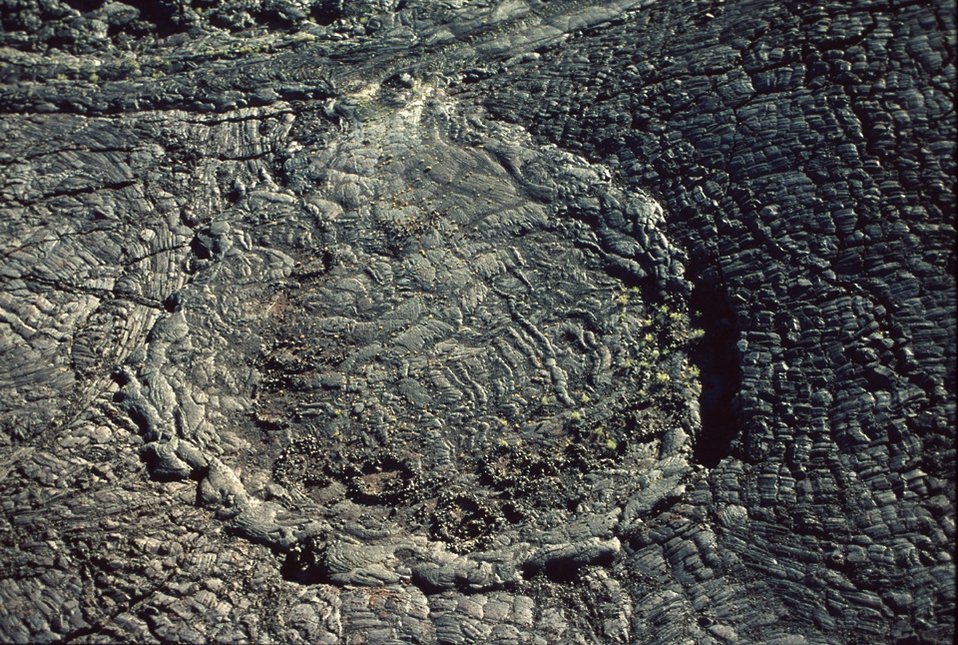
Shoshone Field Office USRD Upper Snake River District